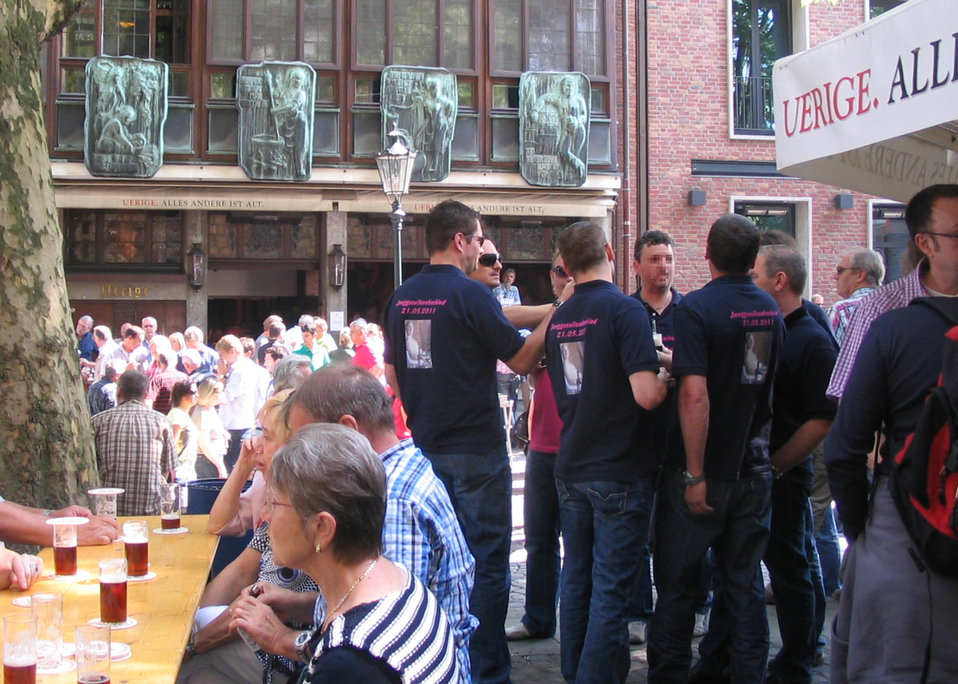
Deutsch: Die Düsseldorfer Altstadtkneipe Uerige an einem schönen Samstagnachmittag im Mai 2011.